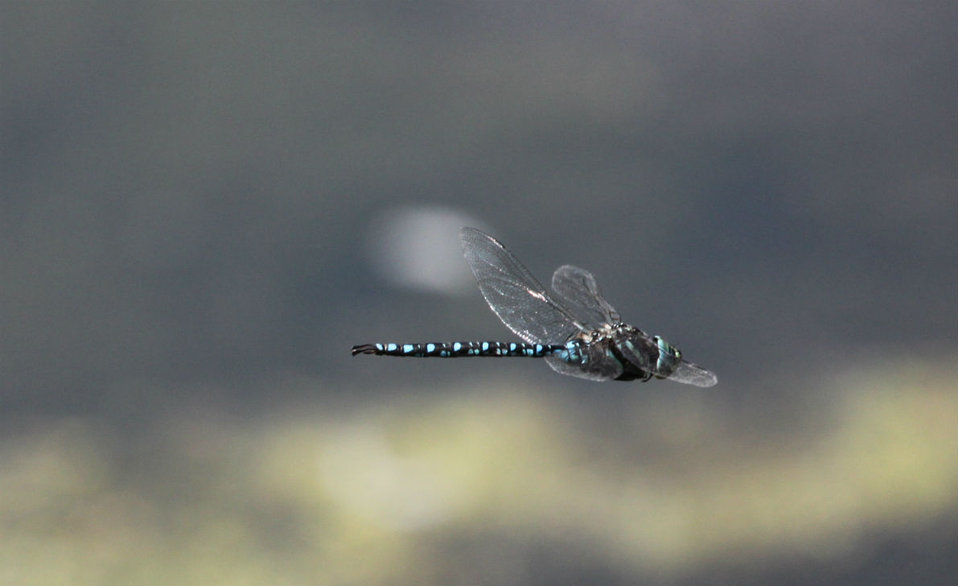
Paddle-tailed Darner

Aeshna palmata in-flight over Refuge wetland; this is a very common darner in wetland habitat.